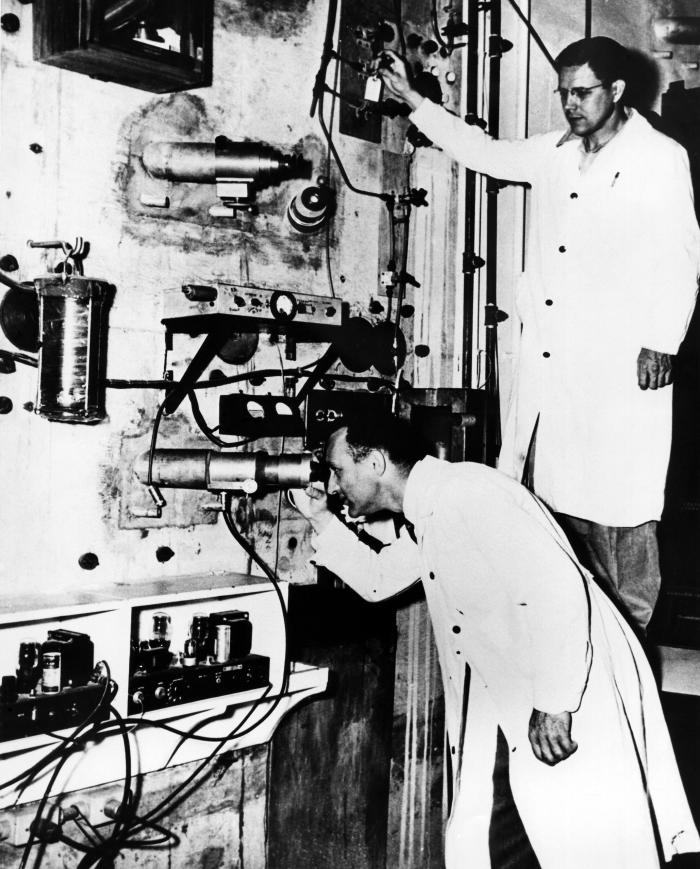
This historic 1950 image, provided by the Center for Disease Control's (CDC), National Institute for Occupational Safety and Health (NIOSH), depicted two white-coated technicians, who were in the process of conducting radioactive experiments within the confines of a concrete cell, located in Oak Ridge, Tennessee. Not knowing the subject of the experimentation, the danger level was high enough to warrant the execution from behind protected walls, in order to avoid radioactive contamination. Without knowing the level of potential contamination produced and possibly expelled from the concrete cell, wearing only a white coat, may or may not have been what today would be deemed adequate protection against contamination.